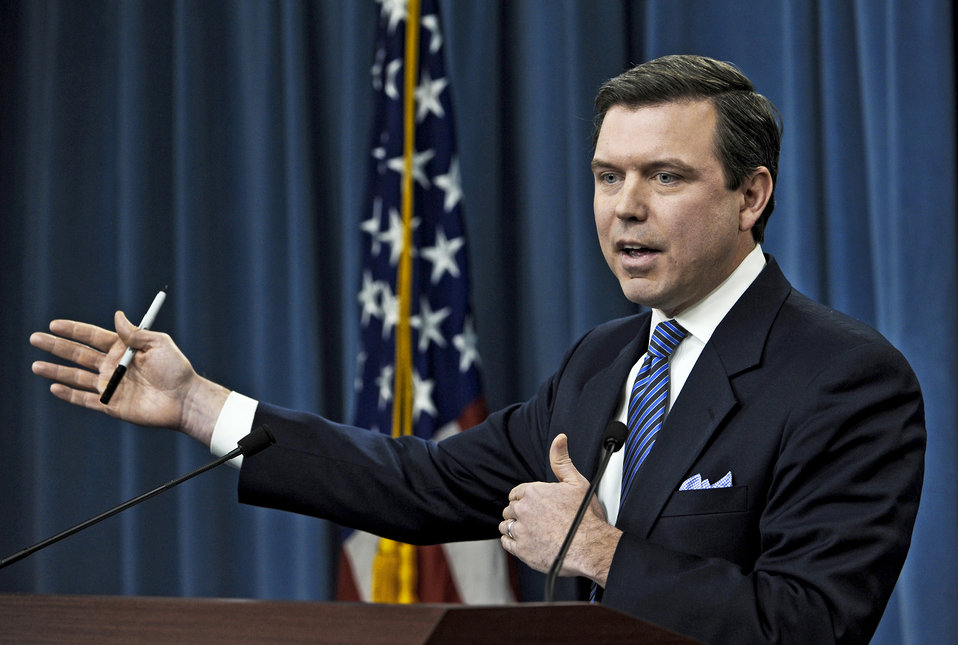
President's plan likely to affect 2013 defense budget

Pentagon Press Secretary Geoff Morrell talks to members of the press Jan. 26, 2011, at the Pentagon.